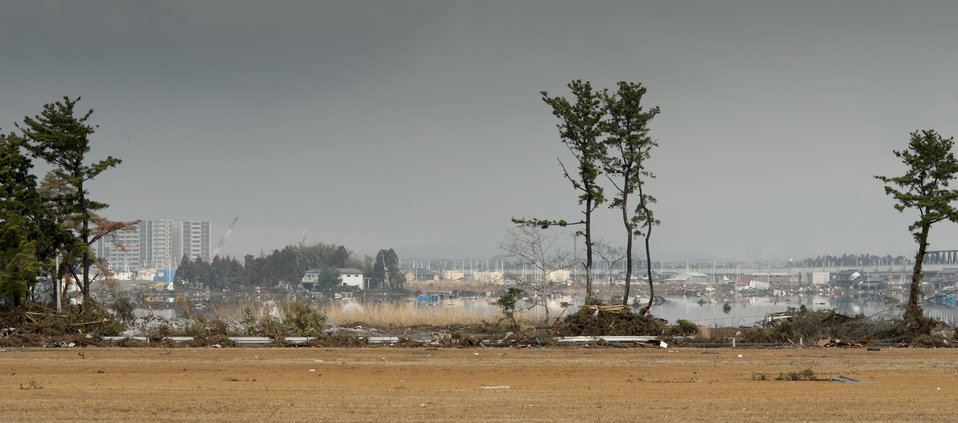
Headline

Debris covers the shores and low-lying ground around Sendai Airport, Japan, March 16, 2011. Members of the 320th Special Tactics Squadron from Kadena Air Base, Japan, deployed to Sendai Airport to help clear the runway and make it ready for fixed-wing aircraft traffic.